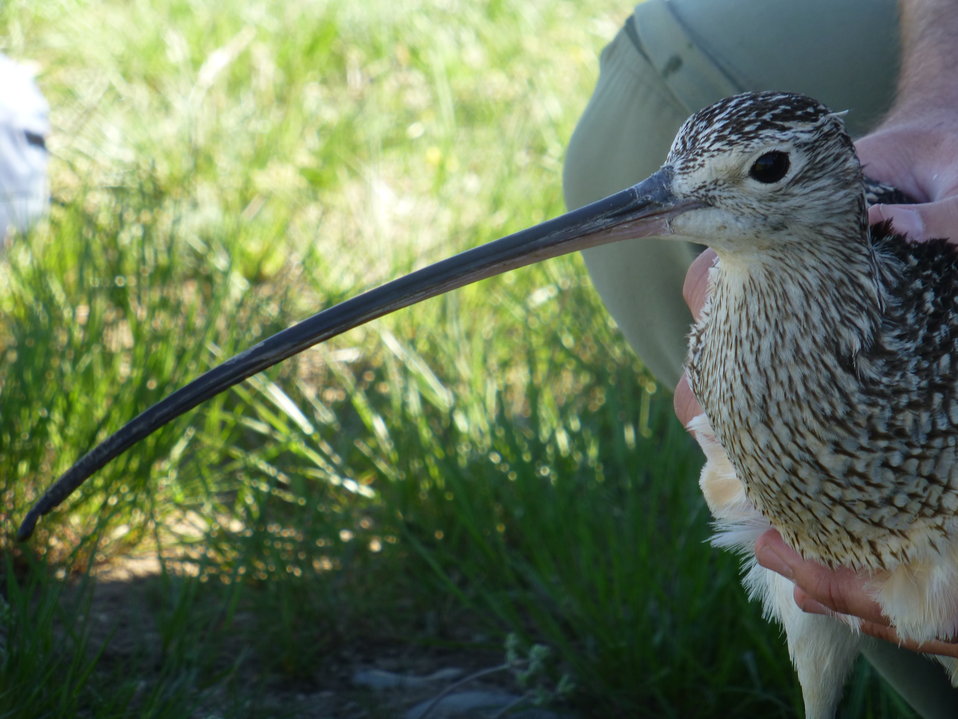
True to Their Name

Long-billed curlews can be found throughout Wyoming, particularly during migration, but they only nest where specific habitat conditions exist. Here, one is captured and fitted with a satellite transmitter on the National Elk Refuge as part of a larger study.